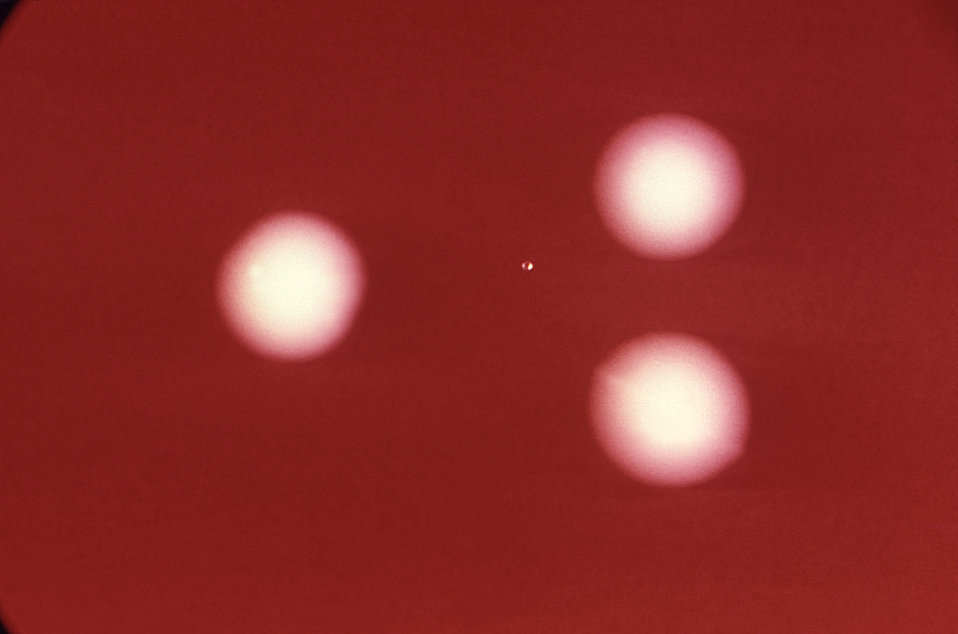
After 72 hours of growth, and under a relatively low magnification of 7.5X, this blood agar plate (BAP) produced colonies of Eubacterium lentum bacteria.